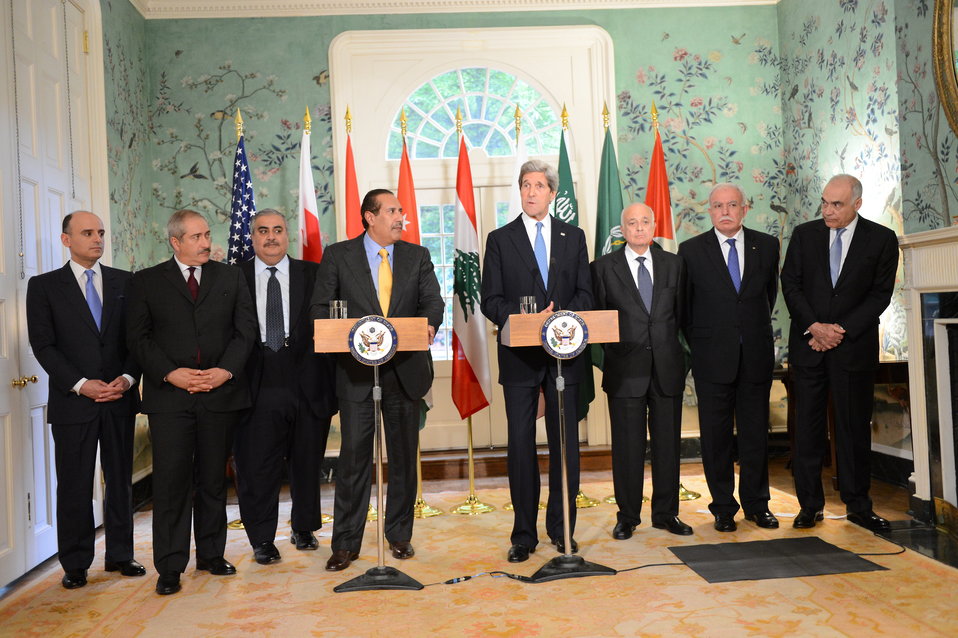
Secretary Kerry and Qatari Prime Minister and Foreign Minister Sheikh Hamad bin Jassim bin Jabr Al-Thani Deliver a Joint Statement

U.S. Secretary of State John Kerry and Qatari Prime Minister and Foreign Minister Sheikh Hamad bin Jassim bin Jabr Al-Thani deliver a joint statement after a multilateral meeting with the Arab League delegation at the Blair House in Washington, D.C., on April 29, 2013.